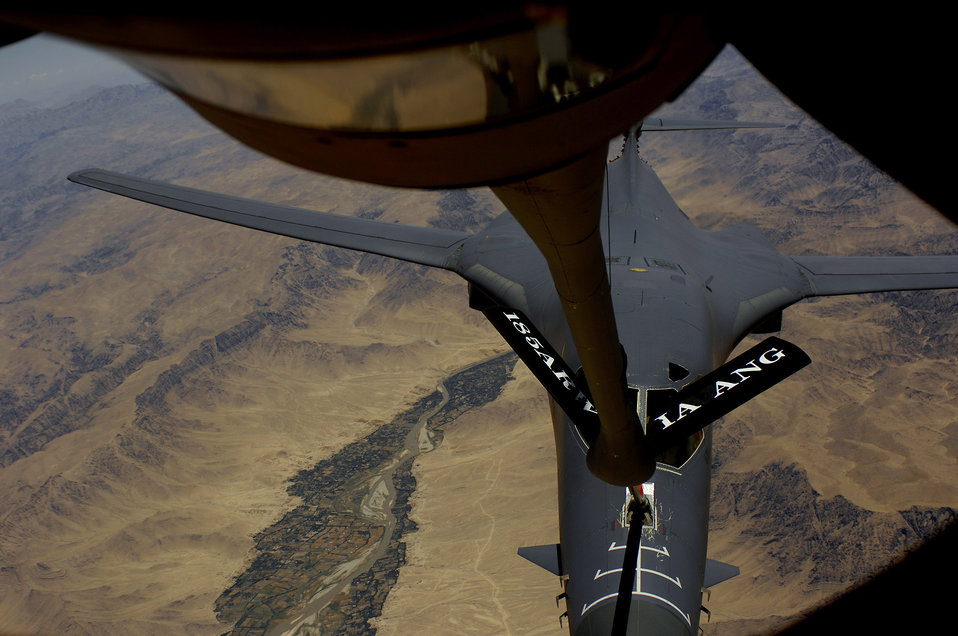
June 11 airpower summary: B-1B supports OEF

An Air Force B-1B Lancer aircraft moves into position to receive fuel May 27 from a KC-135R Stratotanker during a mission over Afghanistan. The B-1B is deployed from Ellsworth Air Force Base S.D. and the KC-135R is assigned to the 22nd Expeditionary Air Refueling Squadron, 376th Air Expeditionary Wing and is deployed from the 174th Air Refueling Squadron, Iowa Air National Guard, Sioux City, Iowa.